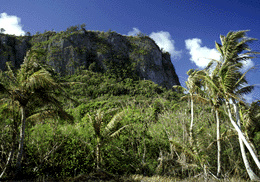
Ritidian Point - Guam National Wildlife Refuge

Ritidian Point is the northernmost point on the Island of Guam.